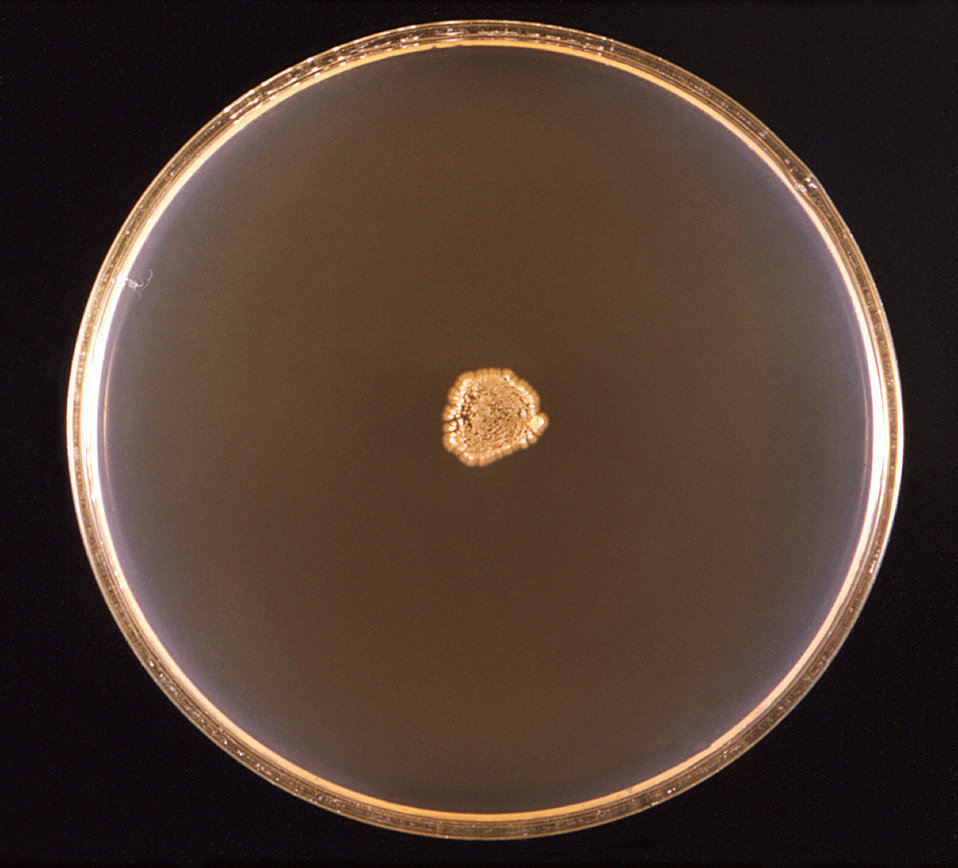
Tinea imbricata is a variant of tinea corporis that is caused by the dermatophyte, Trichophyton concentricum. Initially, dermatologic manifestations appear as circular lesions ringed by a scaly border, with concentric rings of scales subsequently developing. Its geographic distribution is limited to the Far East, South Pacific, and South to Central America.